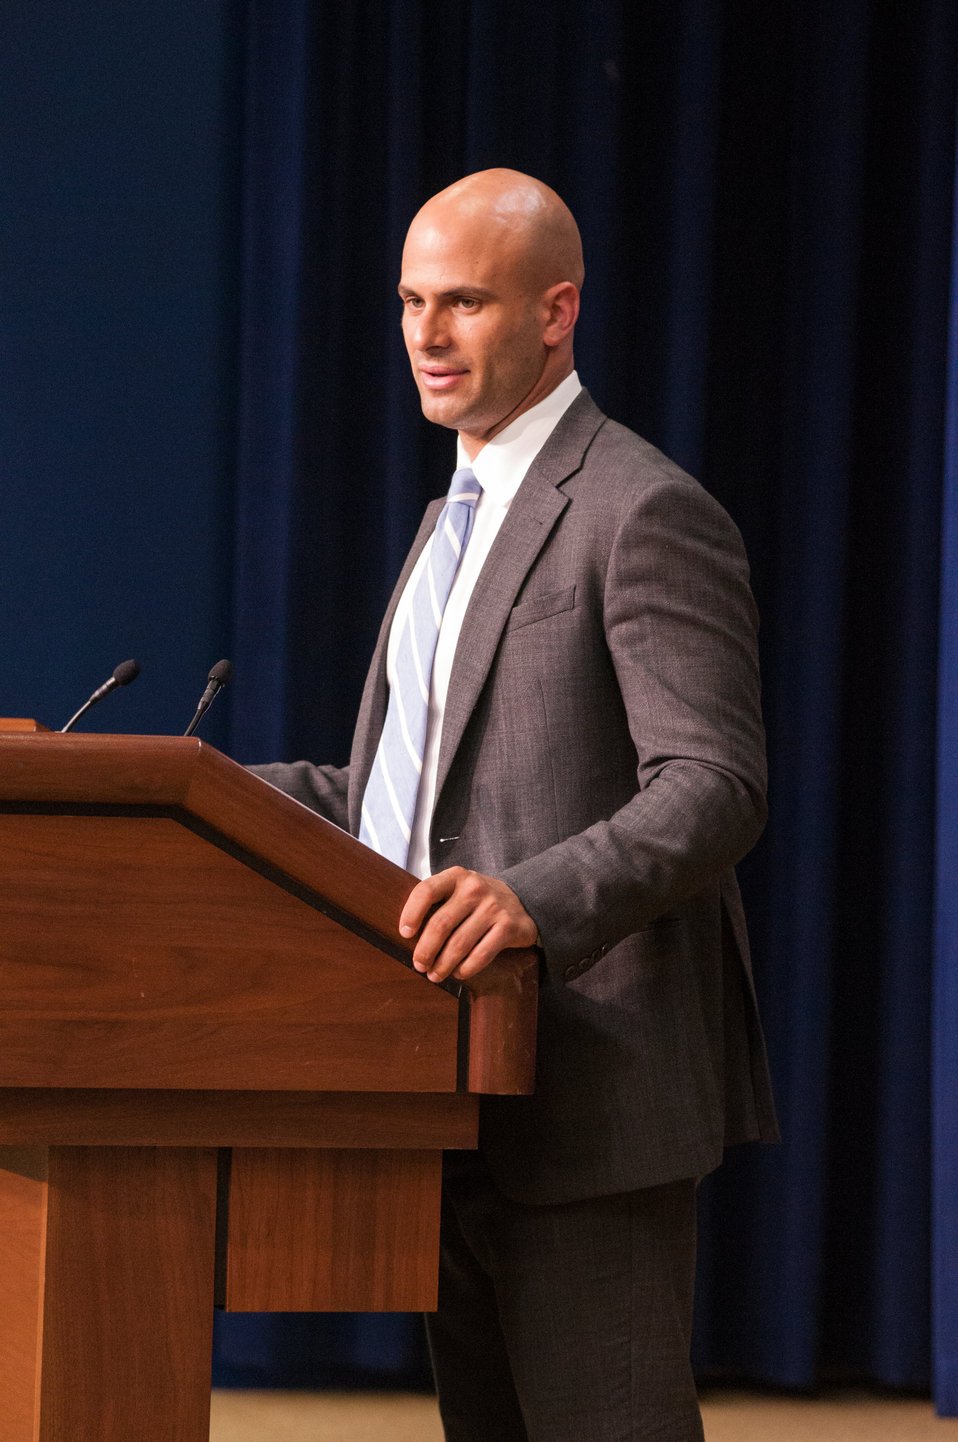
White House Chef Sam Kass speaks at a meeting of the White House Rural Council to an audience of the National State President’s Conference of the FFA on Wednesday, Jul. 24, 2013 in Washington, D.C. Chef Kass discussed nutrition and agriculture topics.